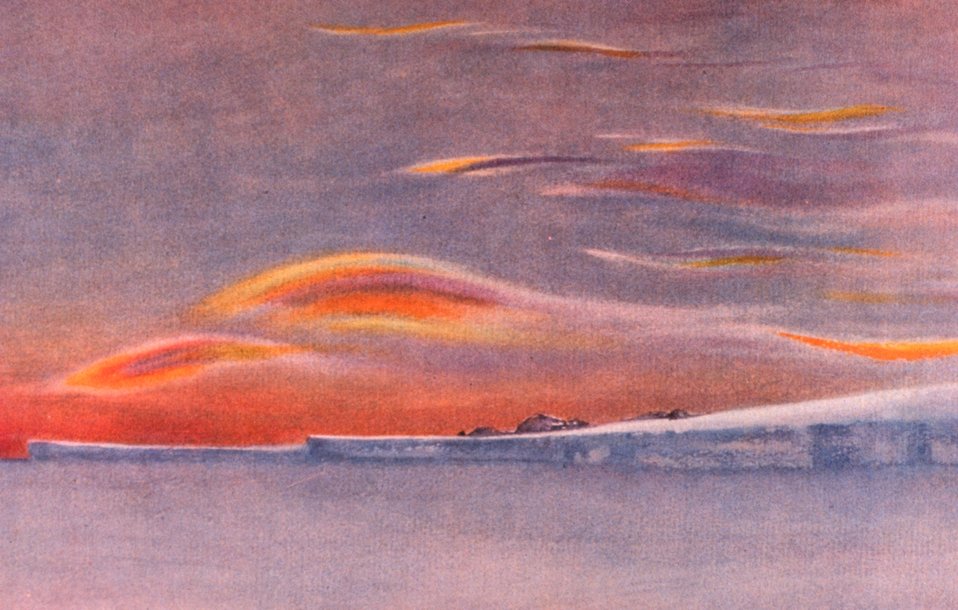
Iridescent clouds looking north from Cape Evans. In: 'Scott's Last Expedition', 1913. Dodd, Mead, and Company, New York. P. 257. Vol. I. Library Call Number G850 1910 .S35 1913.